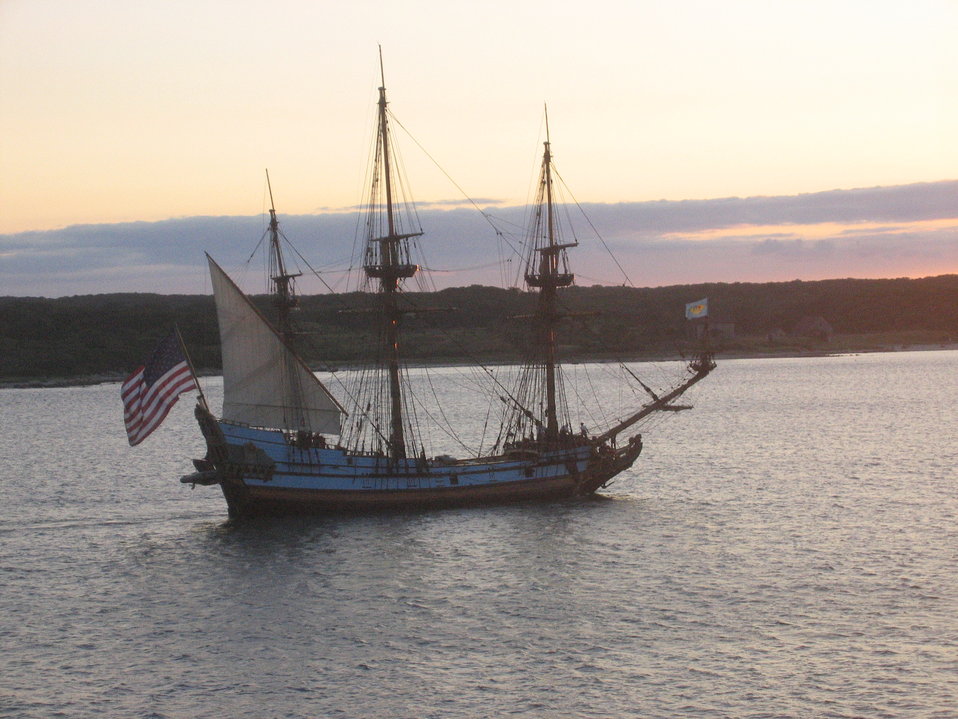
Delaware's tall ship, the KALMAR NYCKEL, sailing into the sunset. This ship is homeported in Wilmington, Delaware.